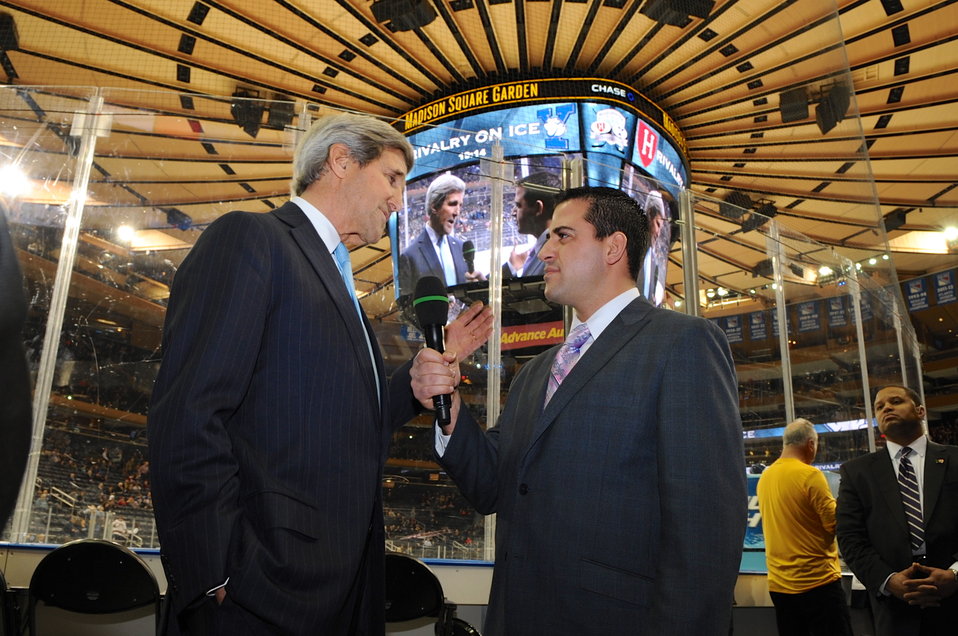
Secretary Kerry Conducts Interview Before Dropping Puck at Harvard-Yale Hockey Game

U.S. Secretary of State John Kerry speaks with WNBC-TV Sports Anchor Harry Cicma before dropping the puck at the Harvard-Yale university hockey game at Madison Square Garden in New York, NY, on January 11, 2014.